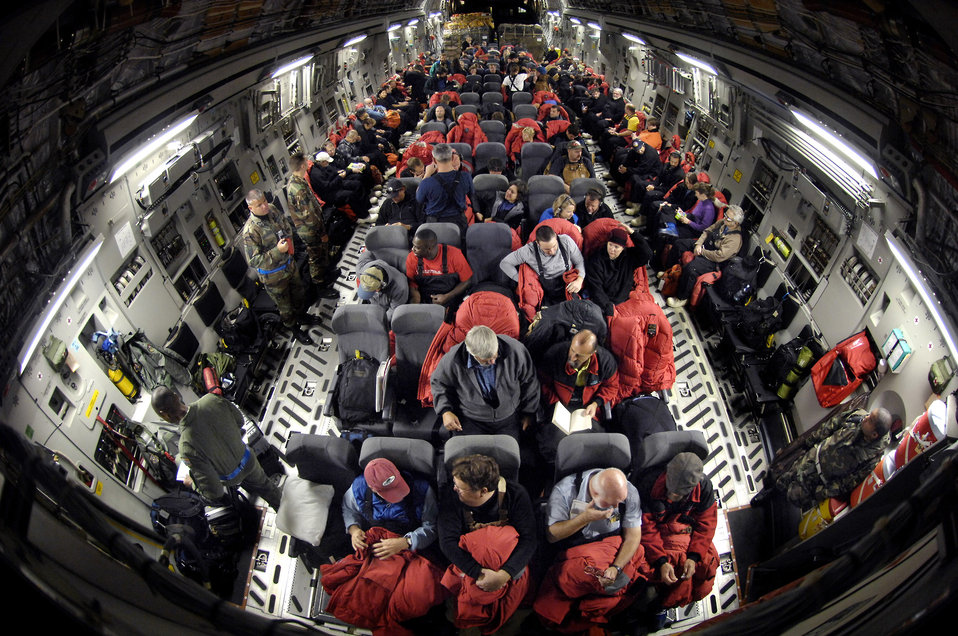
Operation Deep Freeze 2007-08 begins

Members of the National Science Foundation load onto a C-17 Globemaster III for a winter fly-in mission during Operation Deep Freeze Aug. 20 at Christchurch, New Zealand. A C-17 and 31 Airmen from McChord Air Force Base, Wash., began the annual winter fly in augmentation of scientists, support personnel, food and equipment for the U.S. Antarctic Program at McMurdo Station. WinFly is the opening of the first flights to McMurdo station, which closed for the austral winter in February.